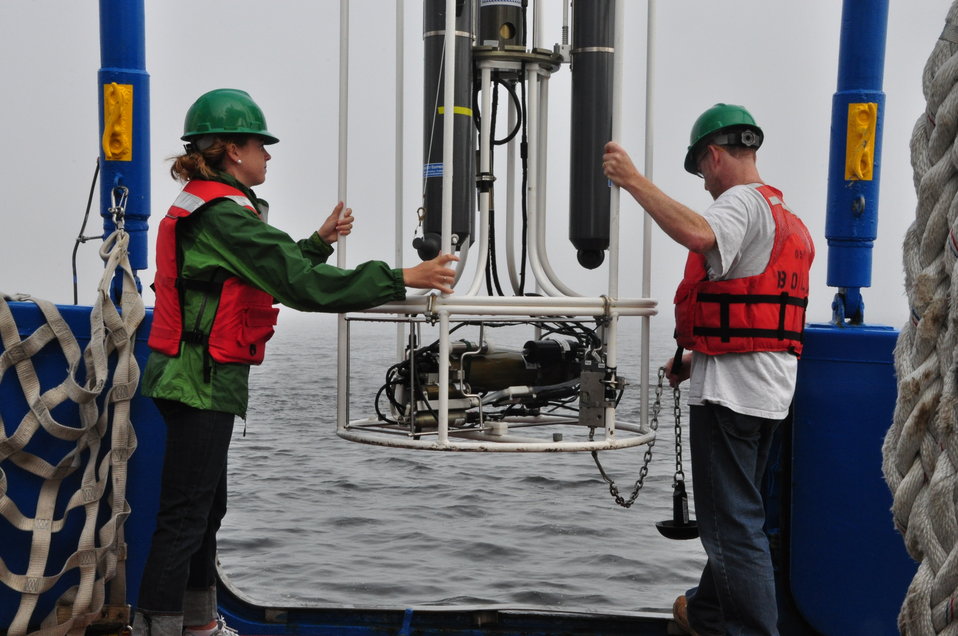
August 2009, Deploying the CTD

Generally two scientists and/ or crew members guide the CTD over the deck to prevent damage from the equipment swinging and hitting the sides of the boat. This is especially important in rougher wind and wave conditions. In this photo, Kate Renahan, David Turin, U.S. EPA.